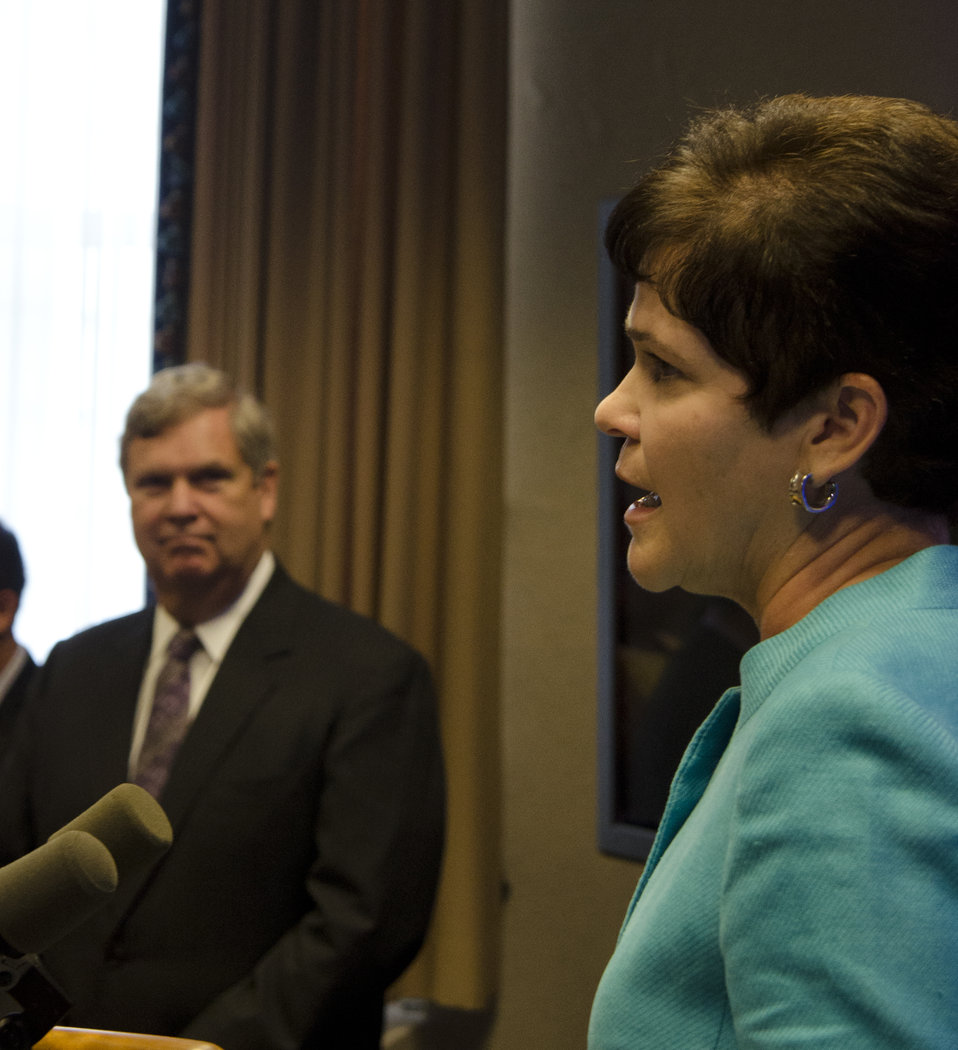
Agriculture Secretary Tom Vilsack listens to Krysta Harden speak at her swearing in as Deputy Secretary of Agriculture at the U.S. Department of Agriculture in Washington, D.C. on Monday, Aug. 12, 2013.